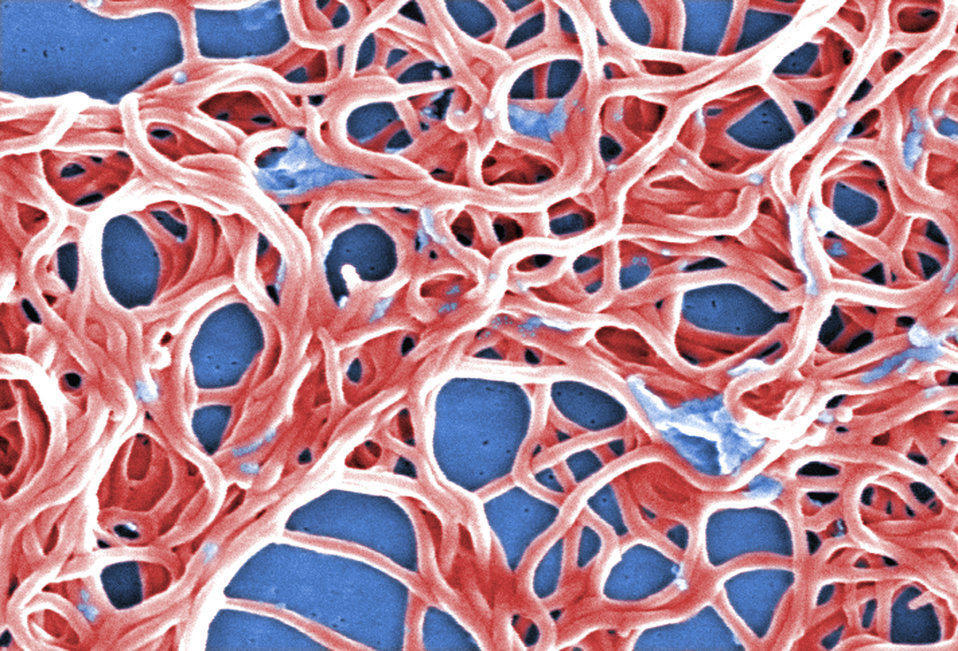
This digitally-colorized scanning electron micrograph depicts a grouping of numerous Gram-negative, anaerobic, Borrelia burgdorferi bacteria, which had been derived from a pure culture.